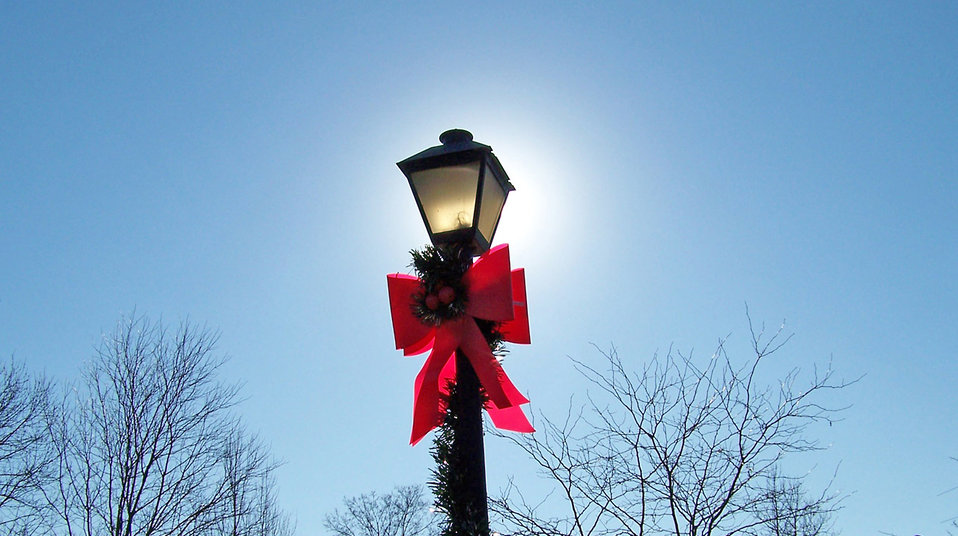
Lamppost

A lamppost decorated for christmas.